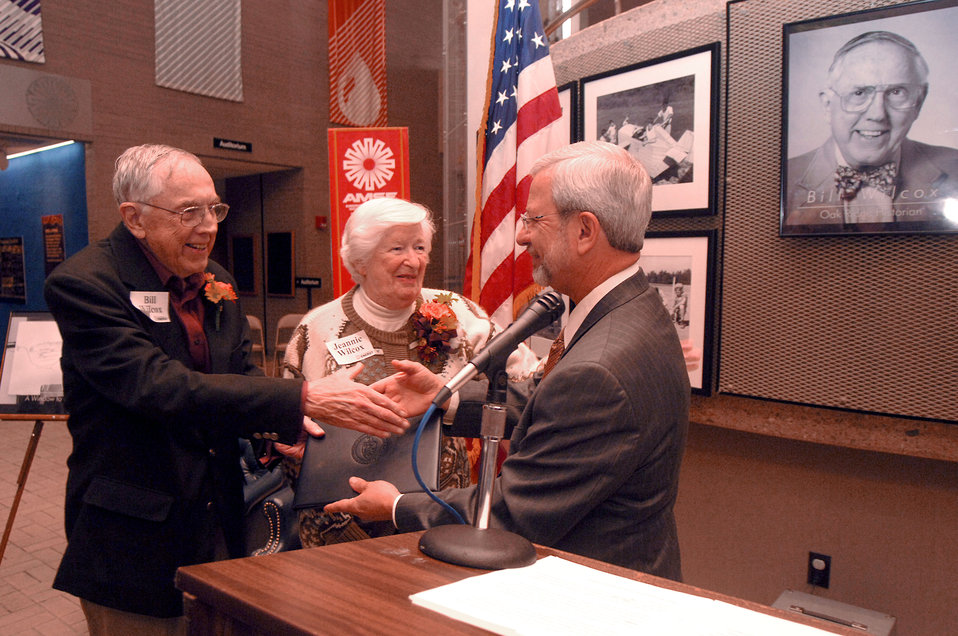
Bill Wilcox Secretary Of Energy Appreciation Award Oak Ridge 2008

08-230 DOE photo Lynn Freeny 10-28-2008 L to R Bill and Jeannie Wilcox and ORO DOE Manager Gerard Boyd Oak Ridge Tennessee